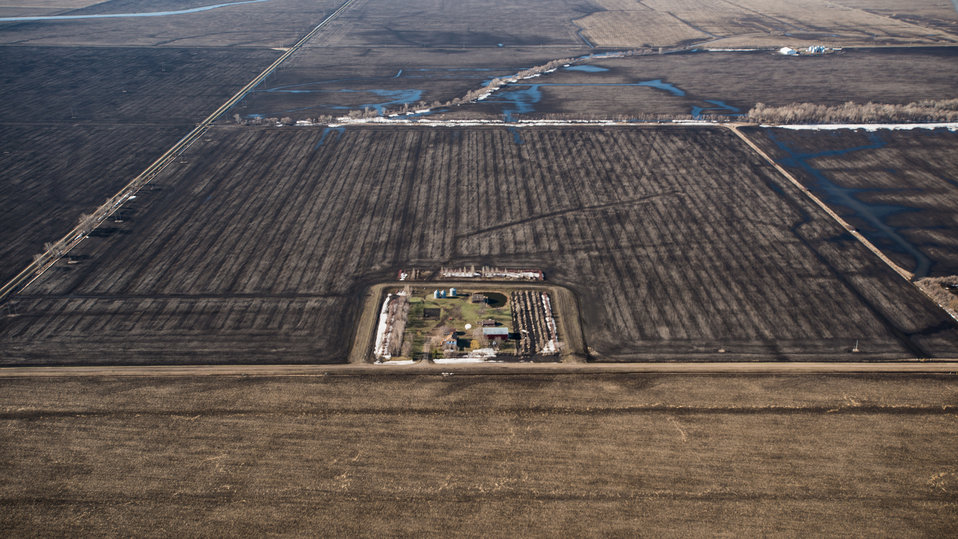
William Lisberg used the U.S. Department of Agriculture (USDA) Environmental Quality Incentives Program (EQIP) to receive an incentive payment to help in the cost of the earthen ring dike construction around his farmstead, in Cass County, ND, on Tuesday, April 30, 2013. A week ago, the farmstead was covered in snow. Now thawed, the water fills the drainages. For information about this and other programs from the USDA the Natural Resources Conservation Service (NRCS) Red River Basin Initiative (RRBI) please see www.mn.nrcs.usda.gov/news/features13/RRBI.html.